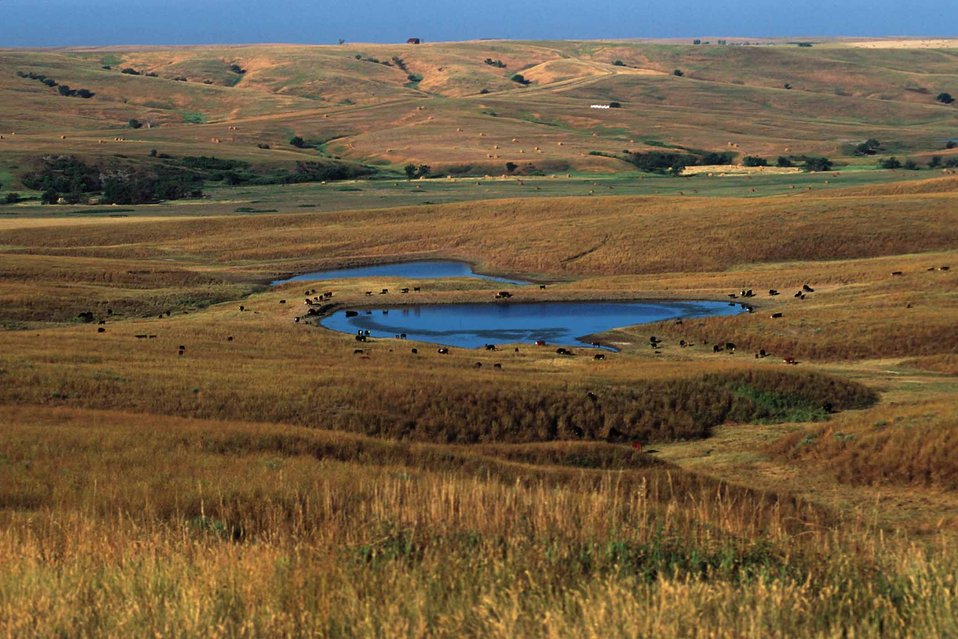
Ponds to deliver water to cattle are a key to grazing management on a ranch in South Dakota.